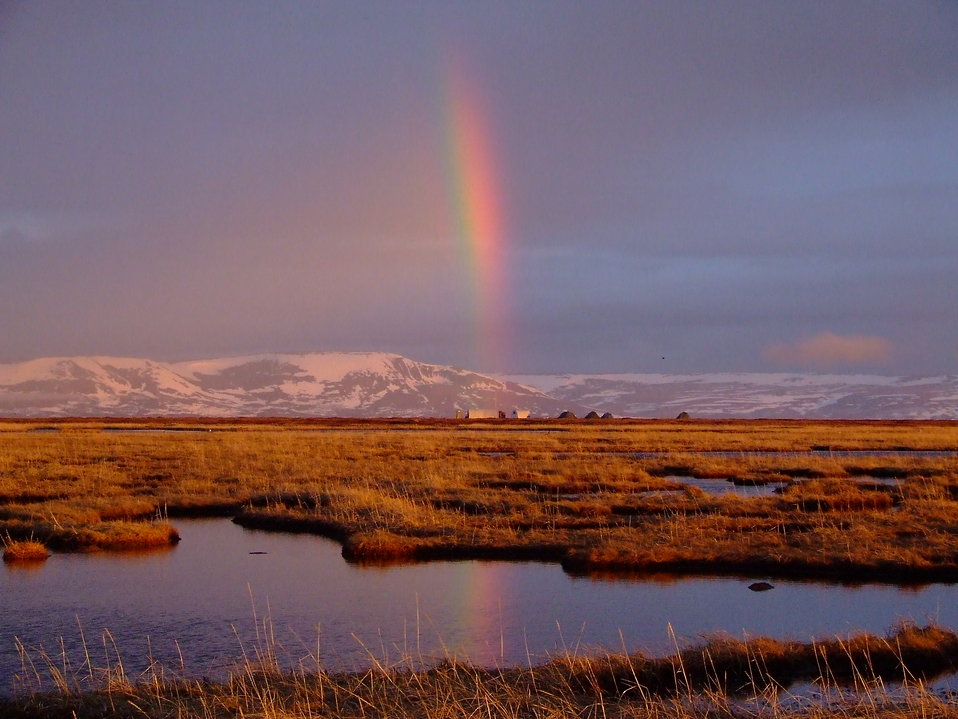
Rainbow over camp

Sunset in the field. A view of the Kigigak Island field camp after a late afternoon rain shower.

USFWS Yukon Delta NWR